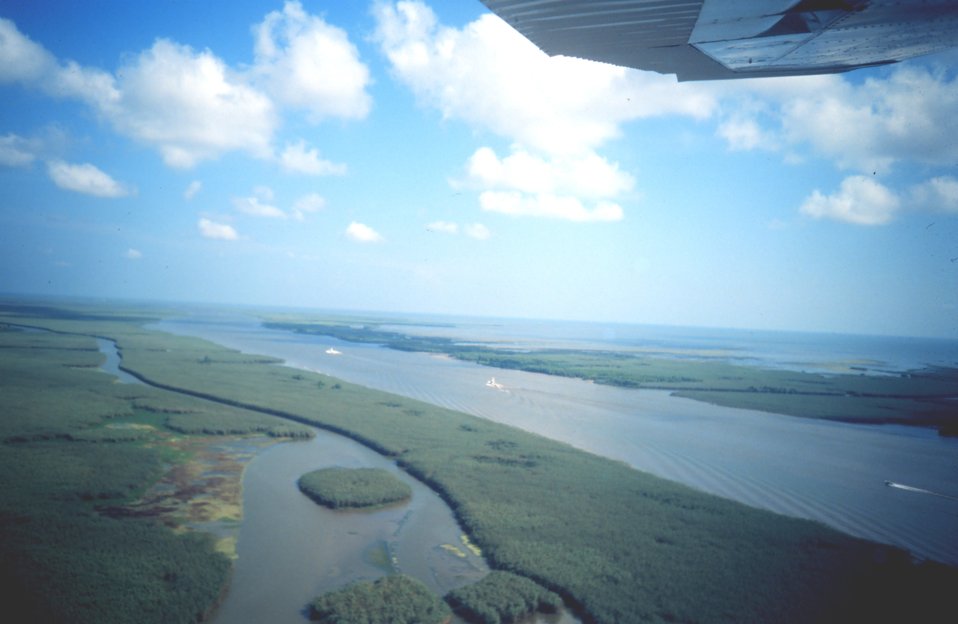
Aerial view of Pass a Loutre